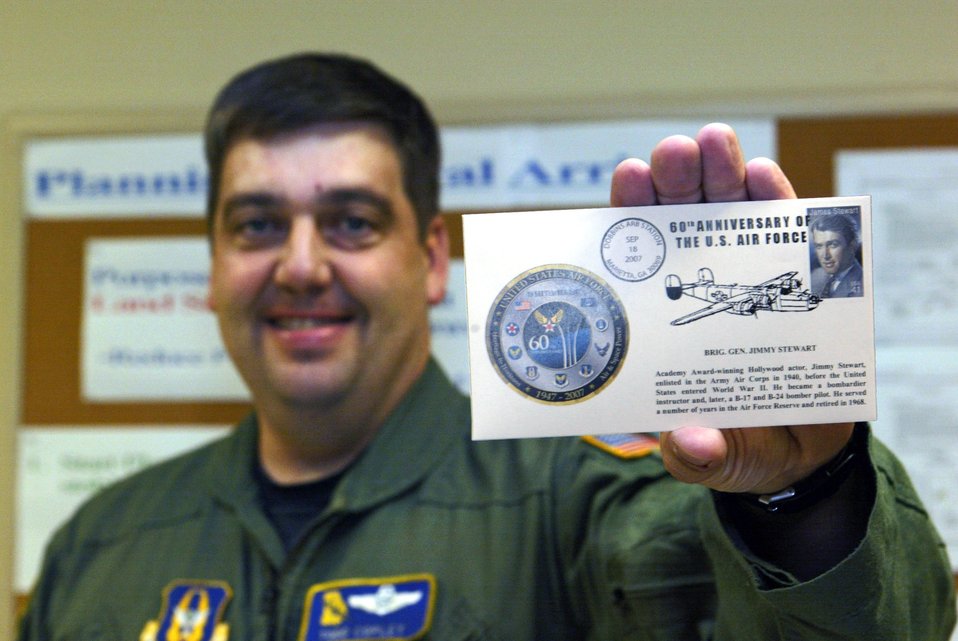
Pilot combines love of stamps, aviation to celebrate Air Force Anniversary

Maj. Todd Copley displays the cancel stamp he designed for the 60th Anniversary of the Air Force. Major Copley is with the 700th Airlift Squadron, Dobbins Air Reserve Base, GA.